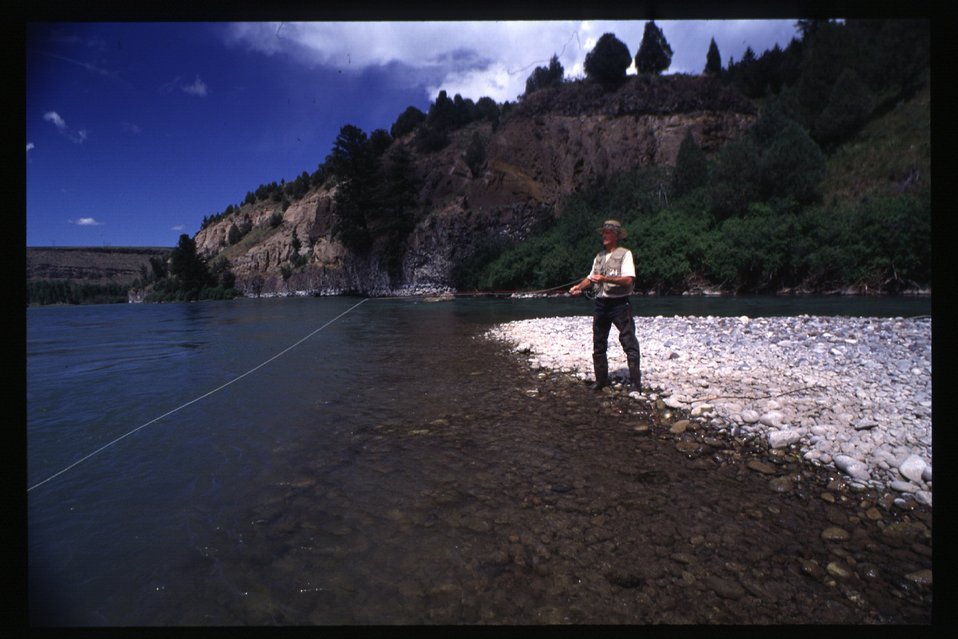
Fly fishing South Fork of Snake River Idaho Falls Field Office USRD Upper Snake River District